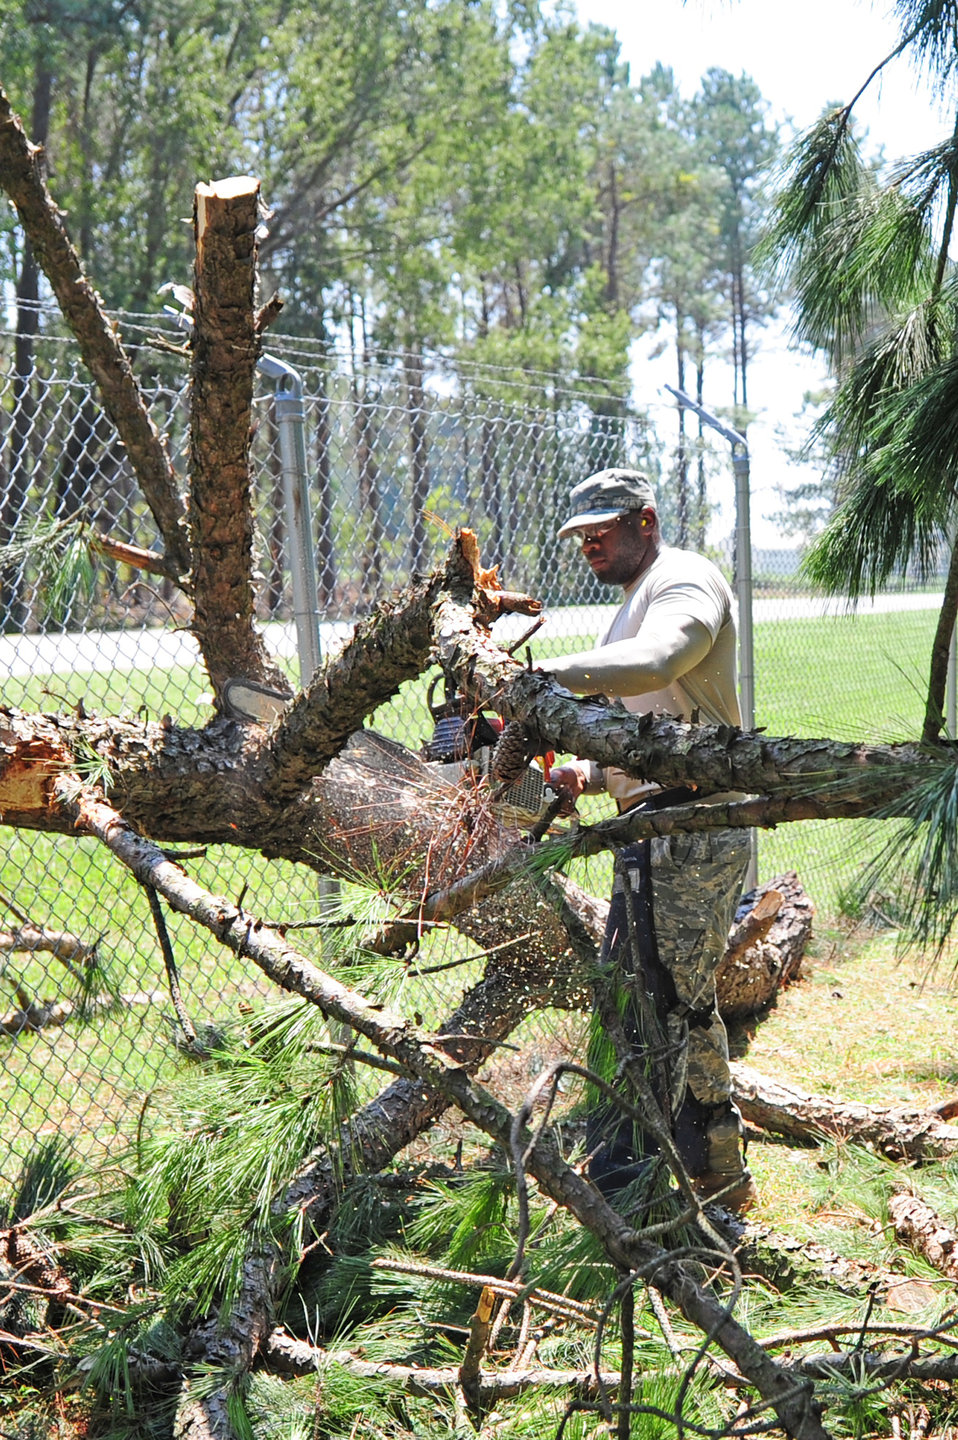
SJAFB cleans up after Irene

Staff Sgt. Emanuel Shiver uses a chainsaw to trim down a tree limb to a manageable size for removal by a front-end loader as part of the cleanup effort after Hurricane Irene struck Seymour Johnson Air Force Base, N.C., Aug. 28, 2011. Airmen from the 4th Civil Engineer Squadron began working around the clock shortly after winds died down the afternoon of Aug. 27 to restore power and remove more than 40 downed trees. Shiver is a 4th CES heavy equipment operator.